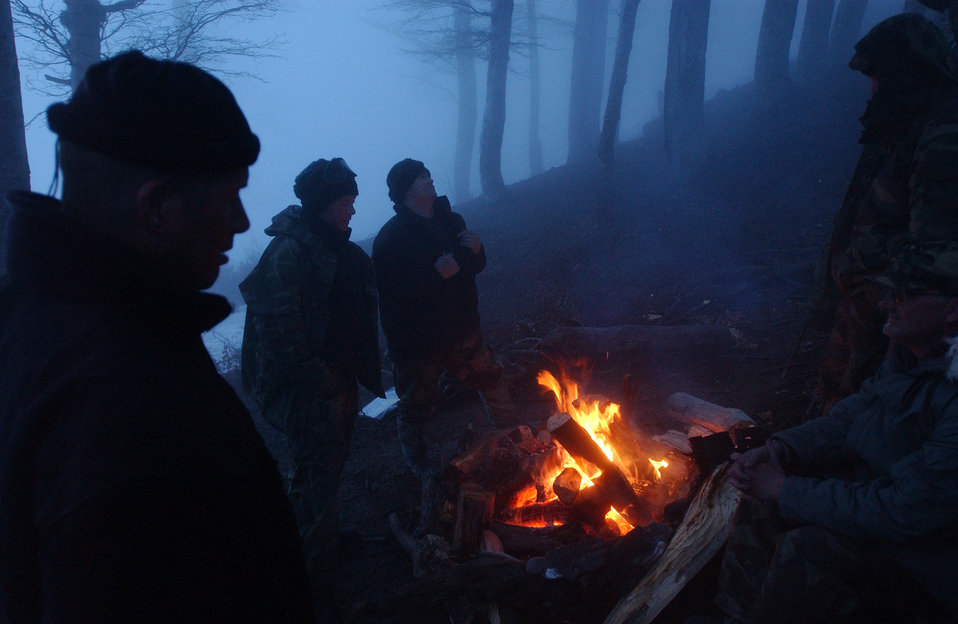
Fire and fog

ALBANIAN MOUNTAINS -- Airmen with an accident security and investigation team from Aviano Air Base, Italy, huddle around a fire while a fog settles in here April 12. Airmen from bases in U.S. Air Forces Europe are deployed to Albania to help investigate the March 31 crash of an MC-130H Combat Talon II.